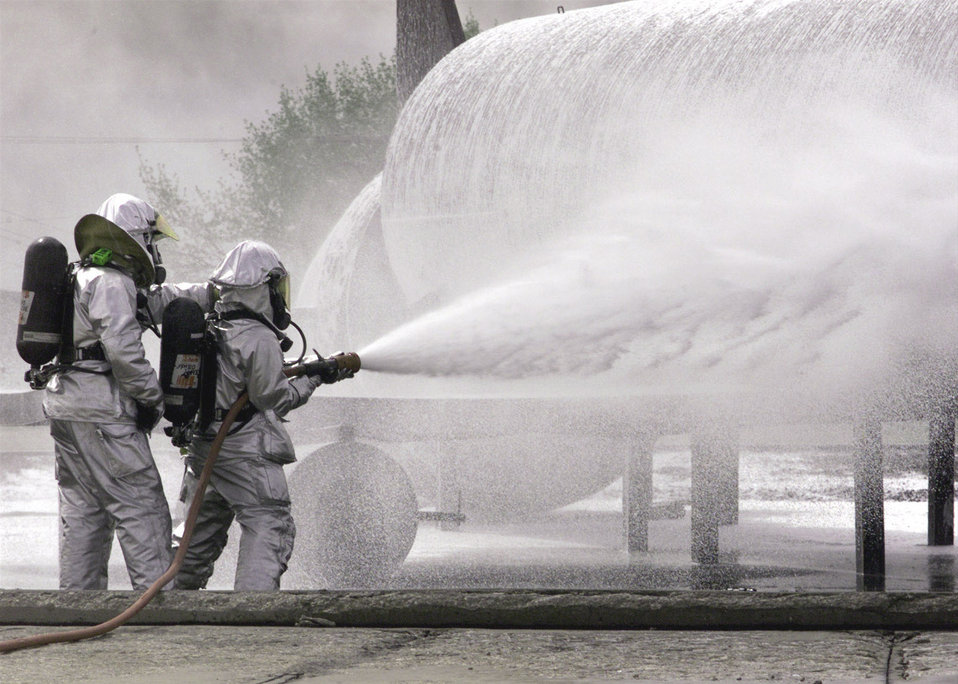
The fire is out

ELLSWORTH AIR FORCE BASE, S.D. -- Firefighters extinguish a fire on a simulated B-1 at the base training grounds here on May 15, 2001.